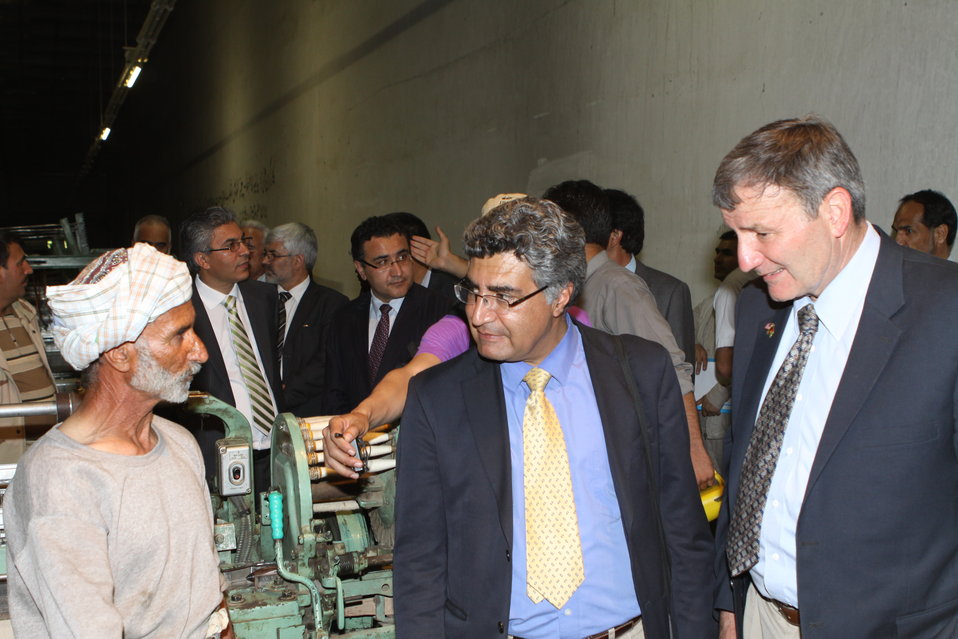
100525 Hirat Textile Company 760